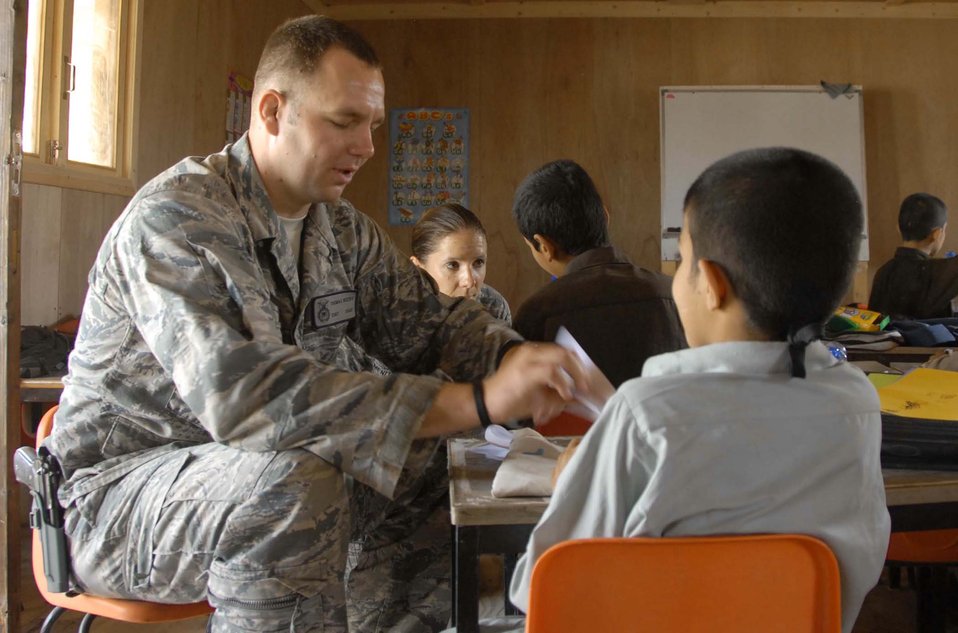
Airman build paper airplanes and relationships

Staff Sgt. Thomas Beers and Staff Sgt. Amanda Menlove demonstrate how to build paper airplanes to Afghan boys at a school April 30, 2011, at Kandahar Airfield, Afghanistan. The two were part of a group of NCOs who volunteered to spend the day with the children and participate in activities such as the building the paper airplanes and playing soccer.